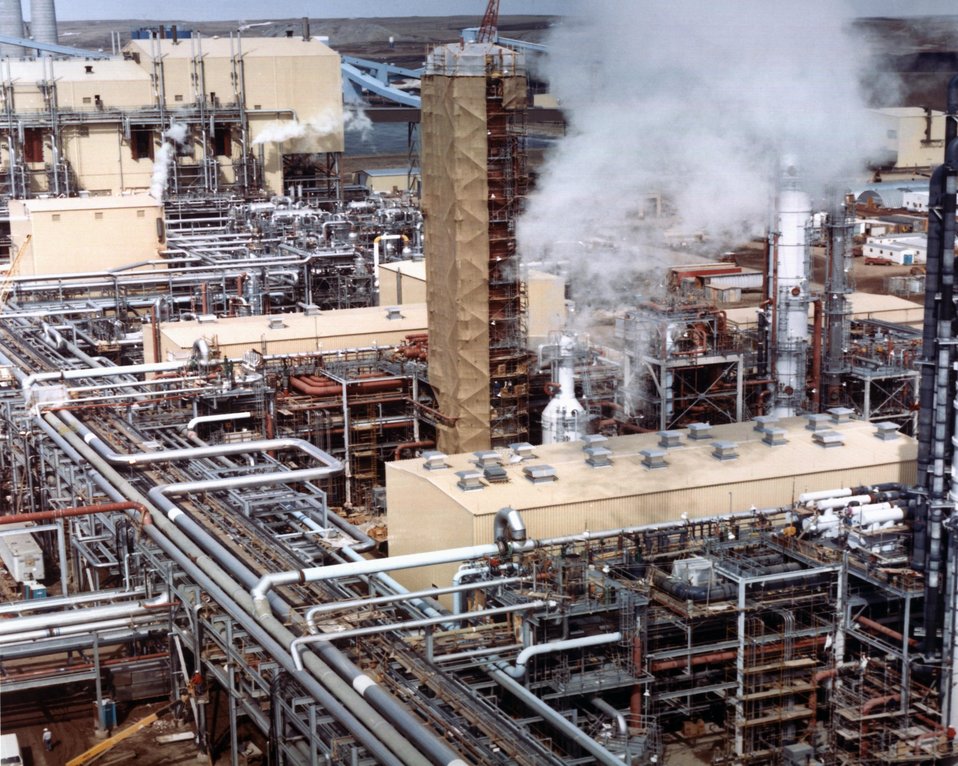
CLOSE-UP AERIAL OF THE MAIN PIPELINE AND, FROM RIGHT FORE- GROUND, THE RECTISOL, SHIFT CONVERSION, AND GASIFIER UNITS.

INTERSTATE NETWORK OF GAS PIPELINES. APPROXIMATELY 14,000 TONS OF LIGNITE WILL BE FED EACH DAY INTO 12 LURGI GASIFIERS (2 ADDITIONAL GASIFIERS WILL BE KEPT ON STANDBY). GAS EXITING THE GASIFIERS WILL BE COOLED, CLEANED OF SULFUR, AMMONIA, AND OTHER IMPURITIES, THEN UPGRADED TO A PIPELINE QUALITY SYNTHETIC NATURAL GAS. THE LURGI PROCESS WILL USE THE LARGER-SIZED COAL FROM THE PLANT'S COAL CRUSHING OPERATION WHILE SOME 8,000 TONS PER DAY OF THE SMALLER SIZE COAL WILL BE SOLD TO AN ADJACENT STEAM ELECTRIC GENERATING PLANT. THE GREAT PLAINS PLANT WILL ALSO PRODUCE 93 TONS PER DAY OF AMMONIA AND 85 TONS PER DAY OF SULPHUR.